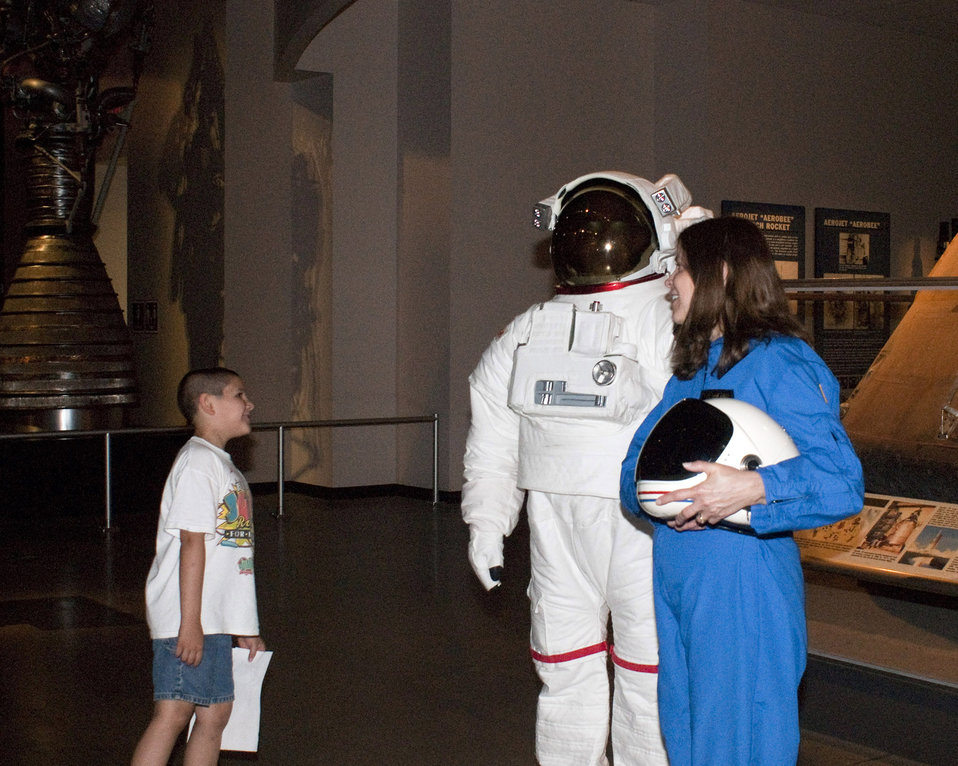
Huge crowd turns out for Night at the Air Force Museum

A visitor checks out two astronauts during Night at the Air Force Museum May 15 at the National Museum of the U.S. Air Force in Dayton, Ohio.